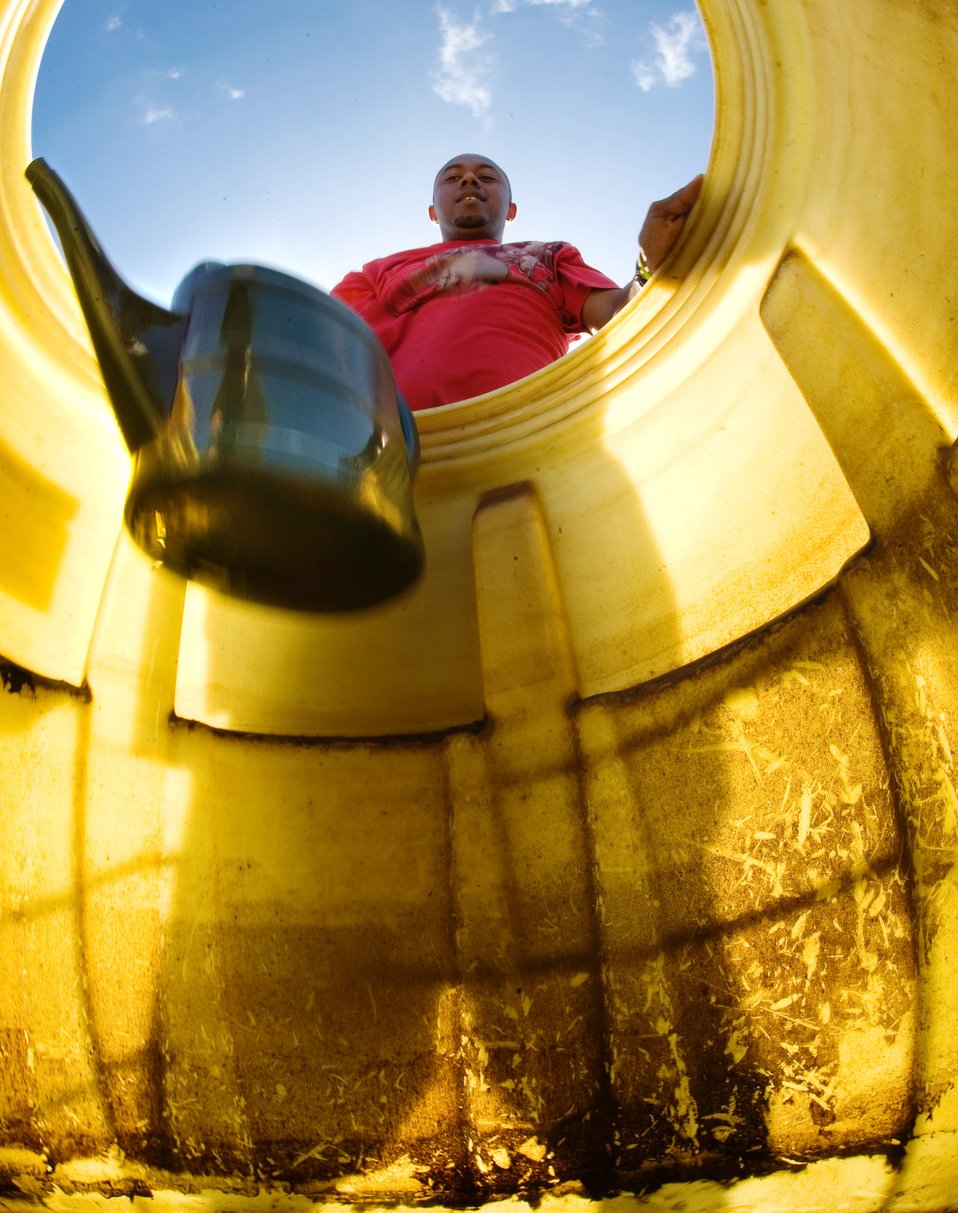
Robert's Plants

Robert Yon takes a break from a busy day to draw some water from a barrel and hand water some Ascension Spurge (E. origanoides), an endangered species of plant found only on the Ascension Island, predominantly on the property used by the 45th Operations Group, Detachment 2, Ascension Auxiliary Airfield (AAF), in the South Atlantic Ocean. Mr. Yon a certified environmental technician works with 13 protocols of engineering and the environment. Some of those are hazardous waste and PCB protocols. The small plot of land he cultivates supports seed collection by a British conservation organization on the island. Although, all U.S. Air Force bases have environmental programs, this small remote island environment allows easy observation of the efforts supporting the endangered spurge plant and self-sufficient water, power and waste programs.